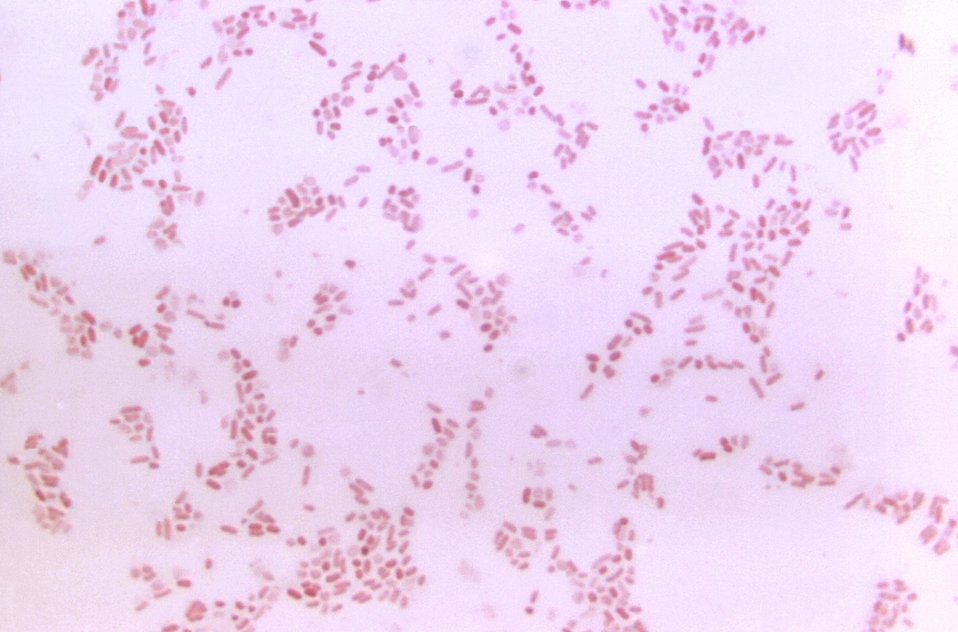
This micrograph depicts Bacteroides fragilis ss. vulgatus bacteria cultured in blood agar medium for 48 hours.